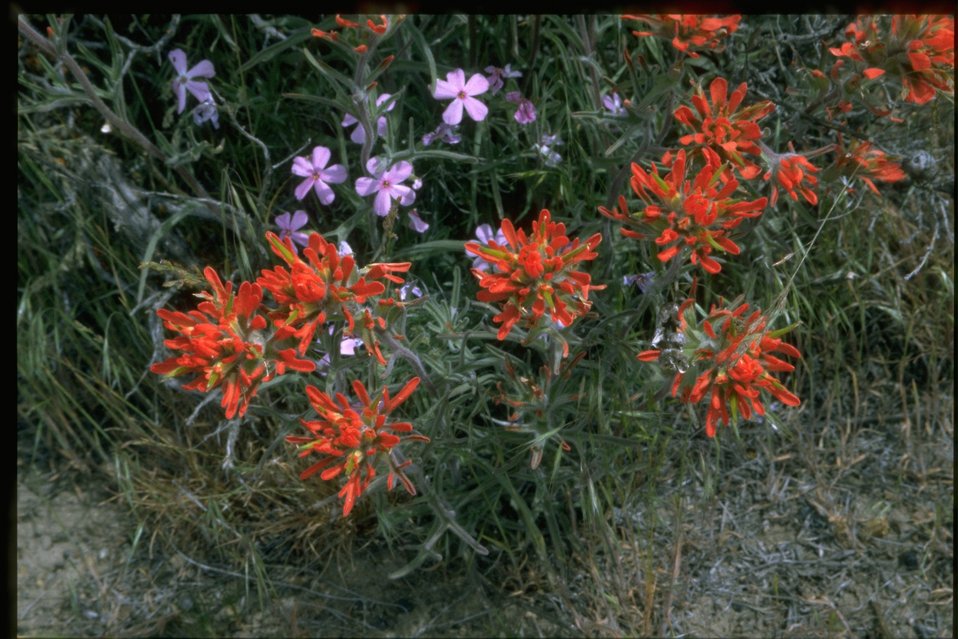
Medium shot of Indian Paintbrush (Castilleja linariaefolia) and Phlox wildflowers.